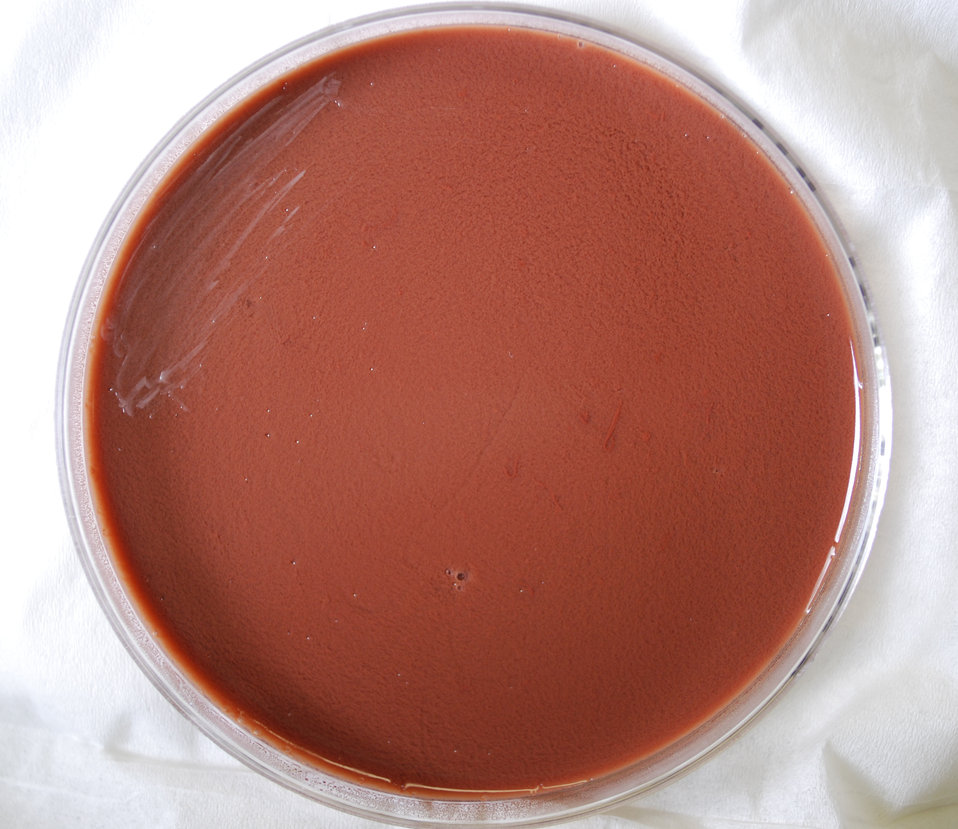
This photograph depicts the colonial morphology displayed by Gram-negative Brucella abortus bacteria, which was grown on a medium of chocolate agar, for a 24 hour time period, at a temperature of 37�C. For a closer view, see PHIL 12207.